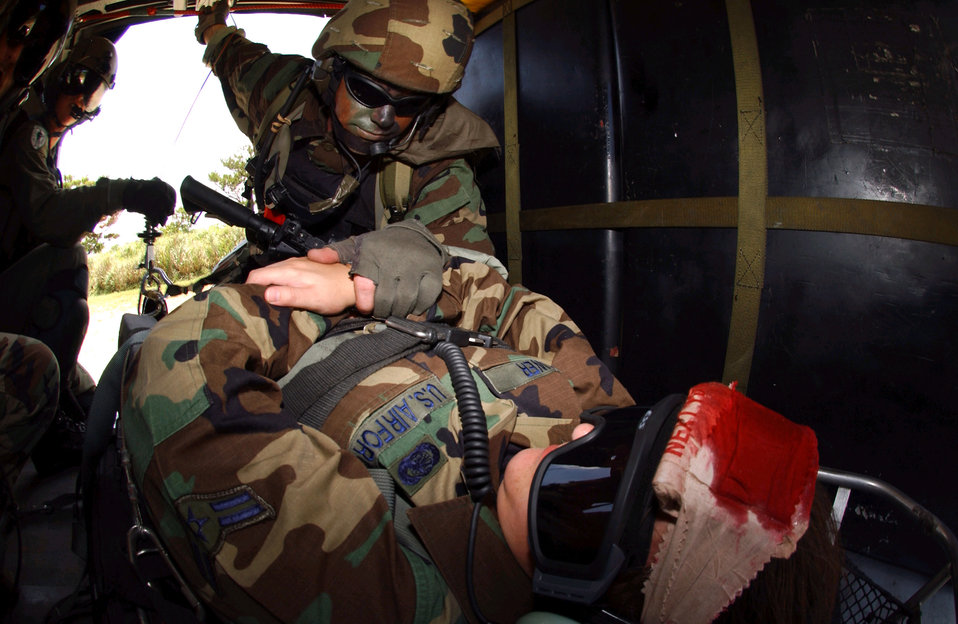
Patient secure

KADENA AIR BASE, Japan -- Staff Sgt. William Moore checks his patient, Airman 1st Class Heather Tower, following a survivor hoist recovery as part of a training extraction here Aug. 5. Sergeant Moore is a pararescueman with the 31st Rescue Squadron and Airman Tower is a member of the 18th Communications Squadron.